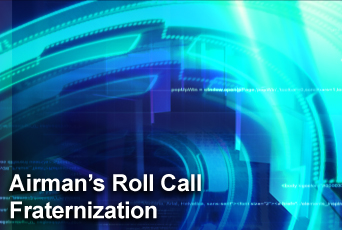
Airman's Roll Call: Fraternization

Fraternization refers to an unprofessional relationship between an officer and enlisted member specifically. Fraternization can have major repercussions for Airmen both professionally and personally.